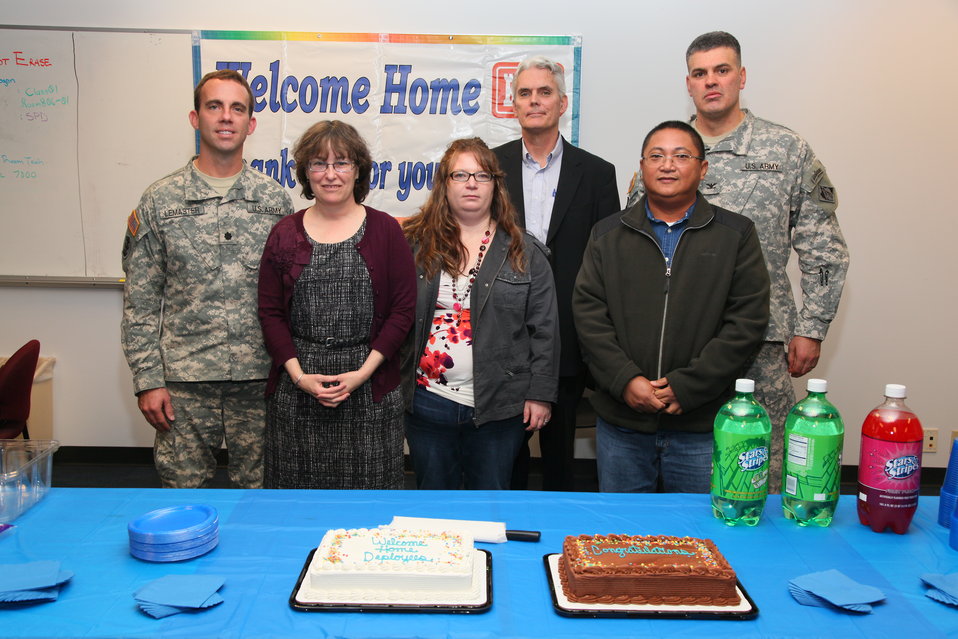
Sacramento District welcomes home Afghanistan volunteers

Sacramento District employees who recently returned from service in Afghanistan pose with district commander, Col. Bill Leady (far right), at a welcome-home ceremony Jan. 13, 2012 in Sacramento, Calif. Pictured from left: Lt. Col. Braden LeMaster, Teresa Rodgers, Marjorie McDonald, Robert Scharf and Danilo Mayo. In 2011 alone, the district saw 27 employees volunteer for service in Overseas Contingency Operations.